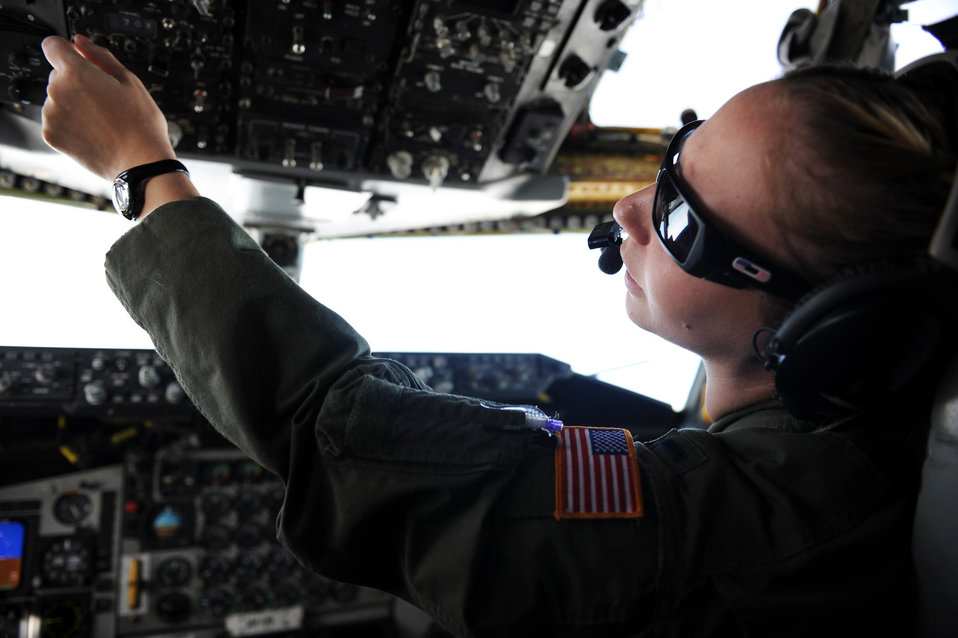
KC-135 Stratotanker refueling mission

1st Lt. Emily Kubusek flies the historic